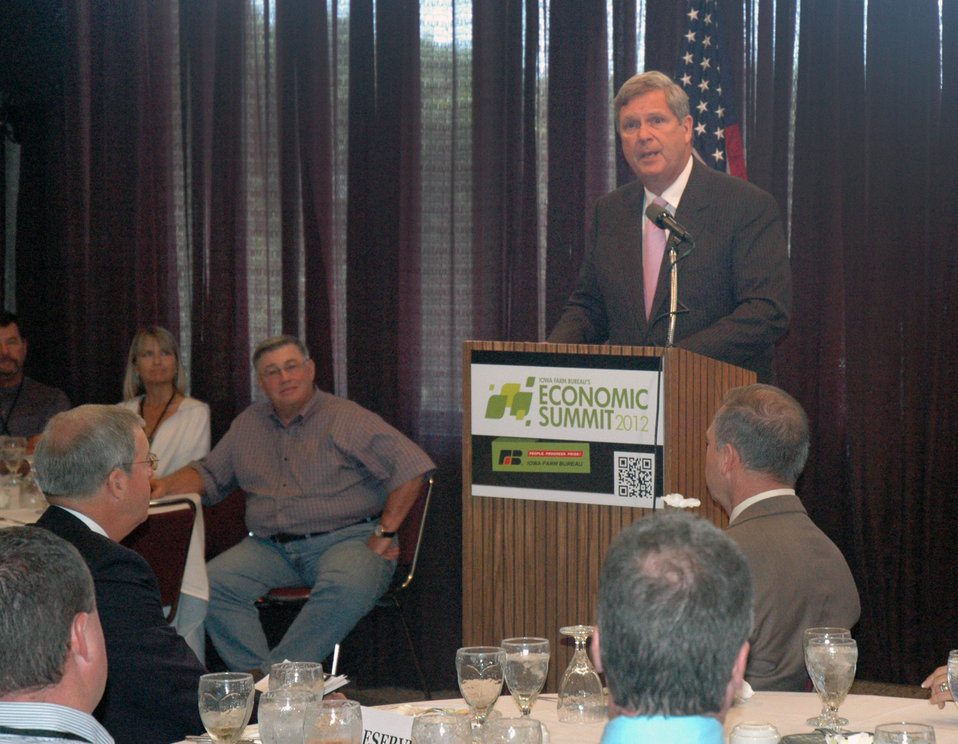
Agriculture Secretary Tom Vilsack addressed more than 200 attendees at the Iowa Farm Bureau’s 2012 Economic Summit meeting in Ames, Iowa, on Tuesday, July 24, 2012. The Secretary talked about pillars that are vital to the revitalization of rural America including the role production agriculture plays in expanding ag exports, the growth of the bio-based economy, the expansion of local and regional food systems and how conservation programs can enhance outdoor recreation activities.